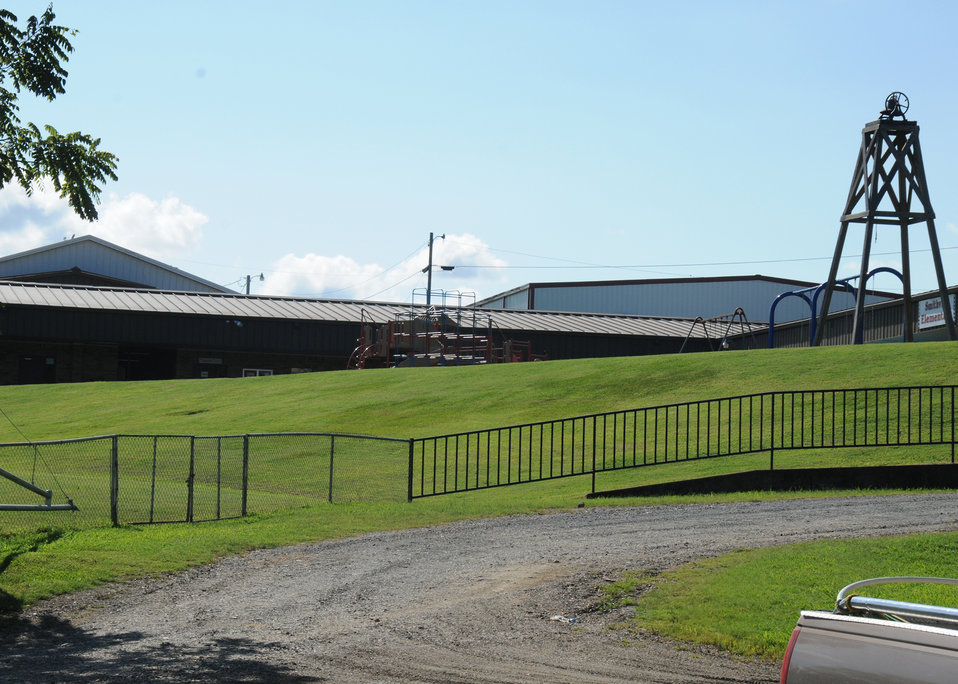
School that uses bottled water for all its students in Smithville, Oklahoma. ARRA funds ($11,299,300.00) have been given to build a water line and water tower for the people of Smithville, McCurtain County, OK.